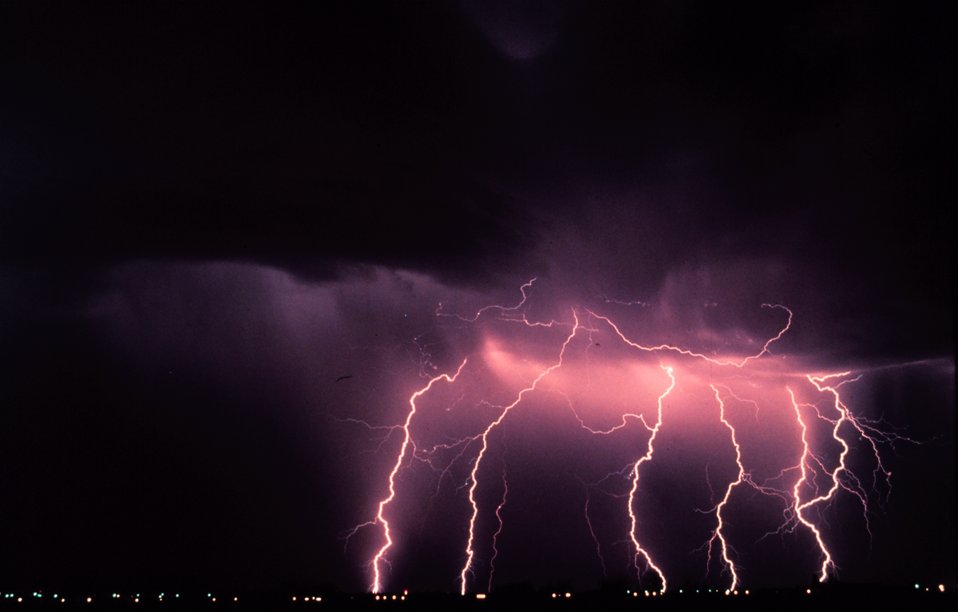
Time-lapse photography captures multiple cloud-to-ground lightning strokes during a night-time thunderstorm.